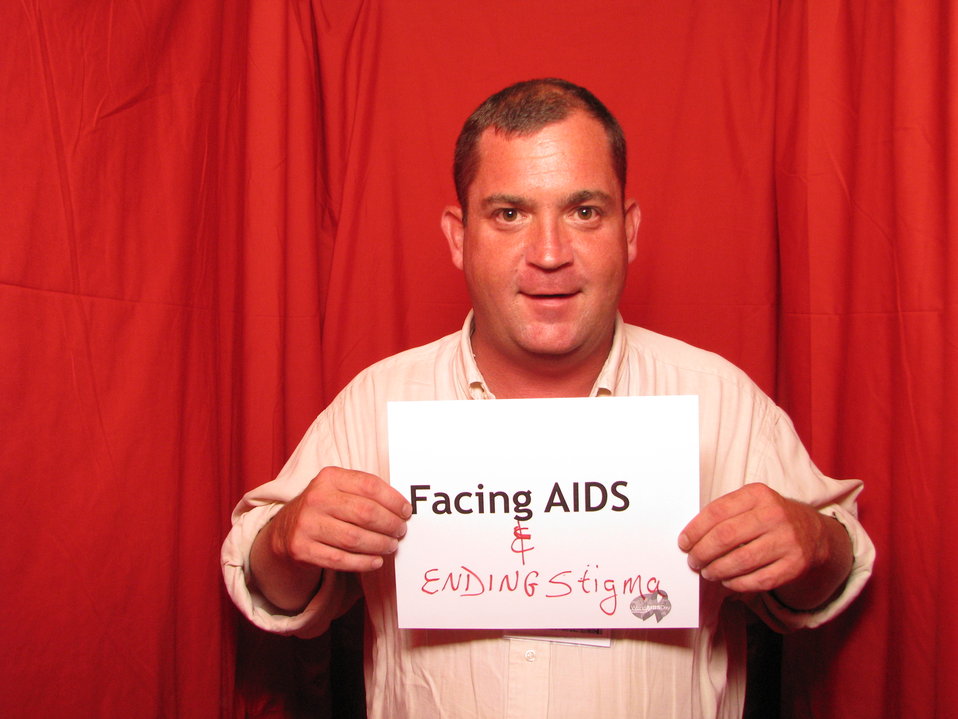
FACING AIDS and ending stigma.

From the AIDS.gov photo booth at the U.S. Conference on AIDS, September 2010 (Orlando, FL).